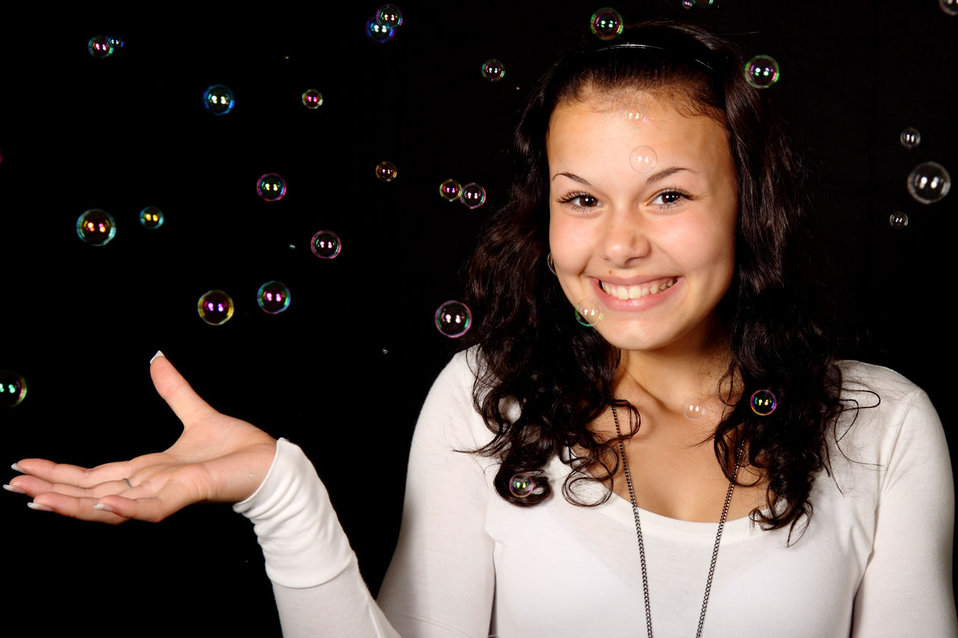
Girl with bubbles

Young woman with bubbles.